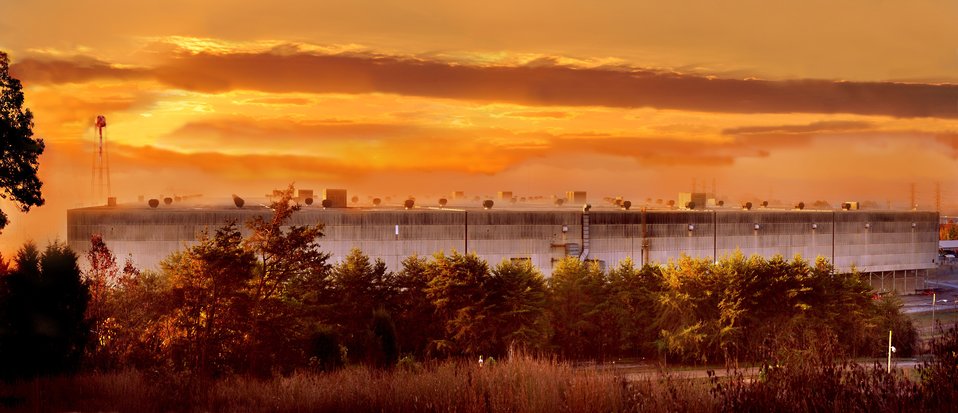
Oak Ridge K-33 Demolition

Recovery Act funds are being used to demolish the 32-acre former gaseous diffusion building, K-33, at Oak Ridge's East Tennessee Technology Park.